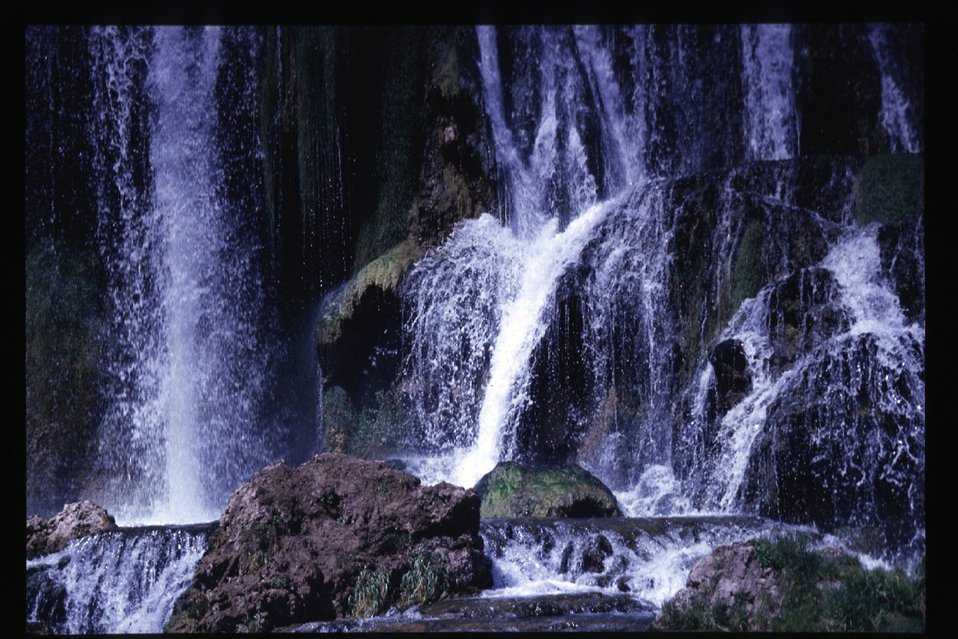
Water fall Scenic river Idaho Falls Field Office USRD Upper Snake River District